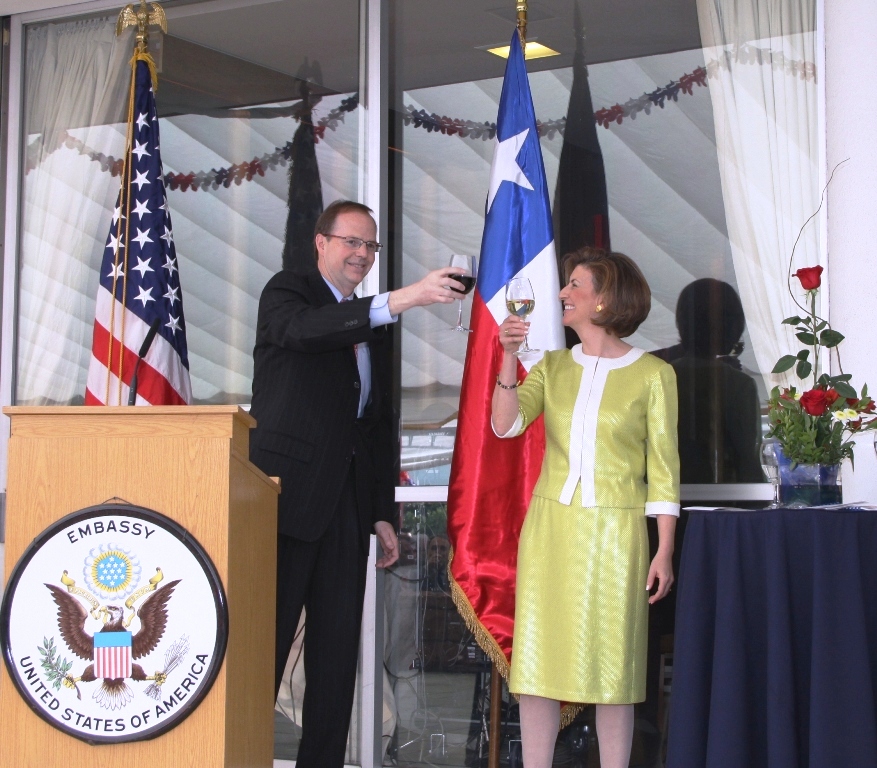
Ambassador Simons and His Wife Victoria Cardenas Simons Toast to the Fourth of July

U.S. Ambassador to Chile Paul Simons and his wife, Victoria Cardenas Simons, welcome guests to the U.S. Independence Day reception with a toast at the Ambassador's residence in Santiago, Chile, on July 2, 2010.